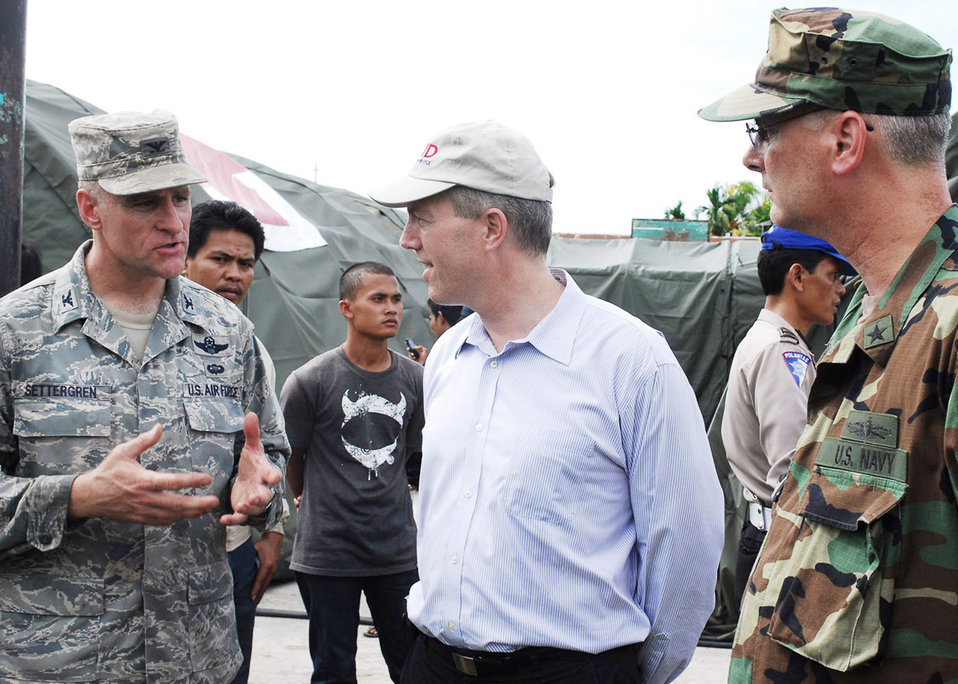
HARRT arrives in Indonesia

Col. Dan Settergren (left) meets with Ted Osius, U.S. Deputy Charge de Affairs in Indonesia, and Rear Adm. Richard Landolt, Amphibious Force 7th Fleet commander, to explain the Air Force humanitarian assistance rapid response team mission and capabilities in front of the team's mobile field hospital Oct. 6, 2009, in Padang, Indonesia. Colonel Settergren is the 36th Expeditionary Contingency Response Group commander.